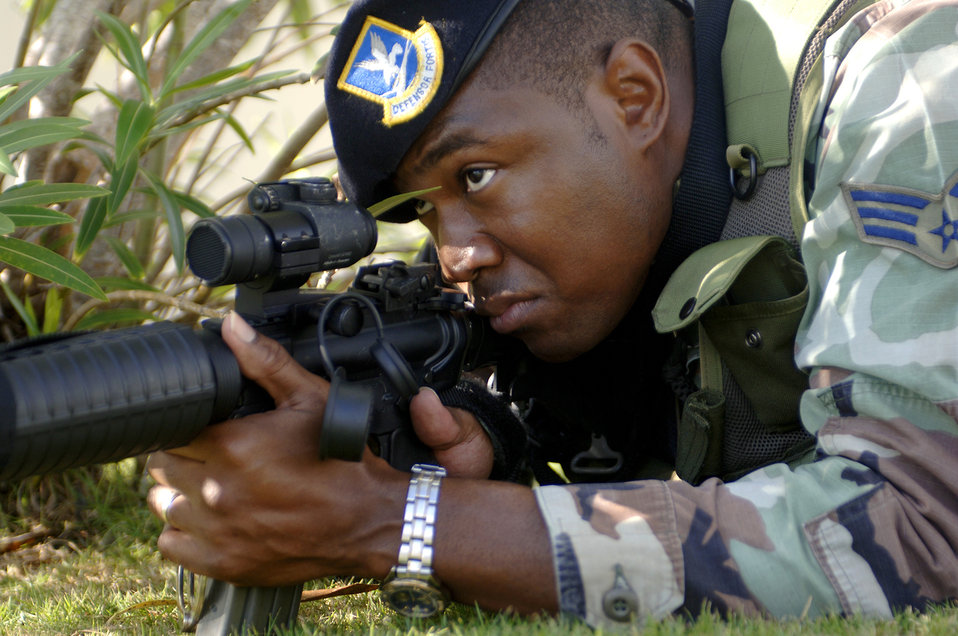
Security response

ANDERSEN AIR FORCE BASE, Guam (AFPN) -- Senior Airman Detrick Jack takes cover as a responding security unit. Airman Jack is with the 36th Security Forces Squadron.